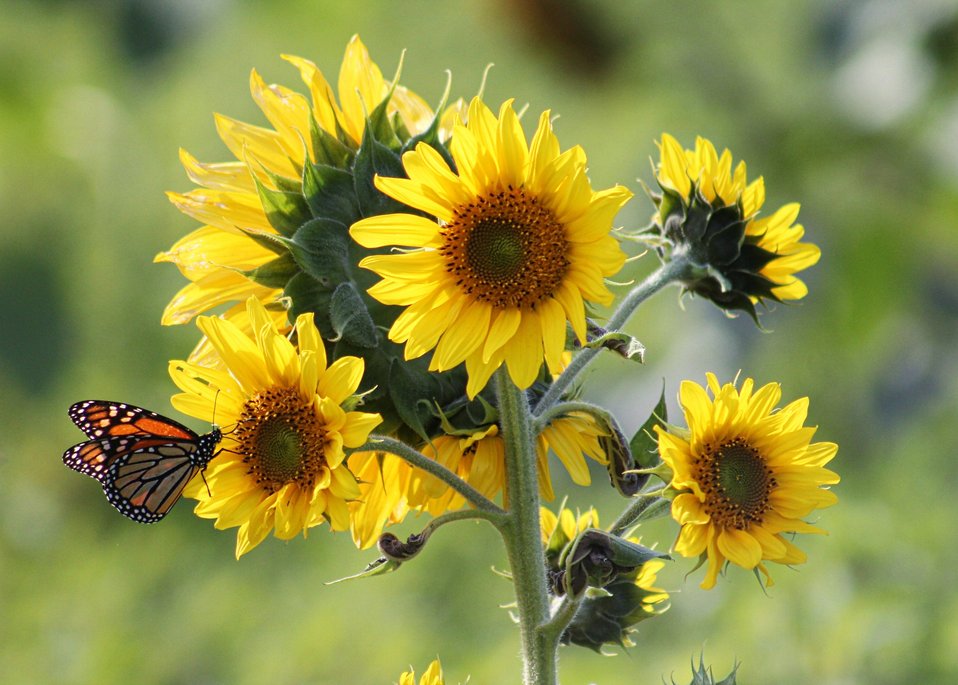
Butterfly sitting on a daisy.